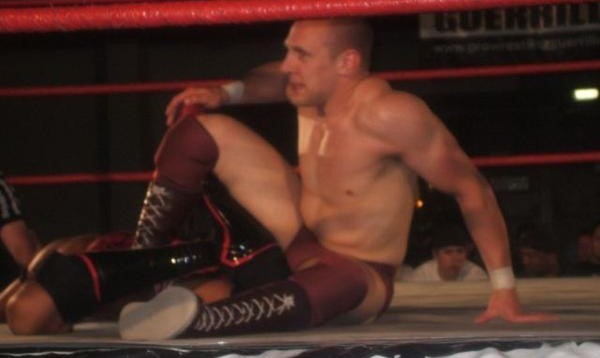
A picture of brian danielson i took at ROH show in Cincinnati Ohio in 2006
Category:Professional wrestling free use media